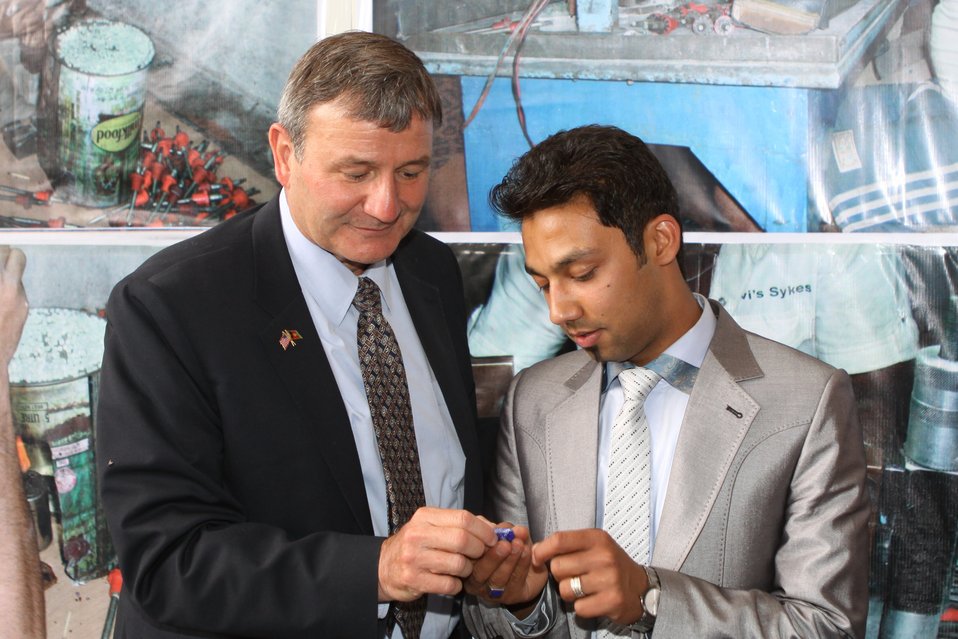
100525 Hirat Marble Conference 510